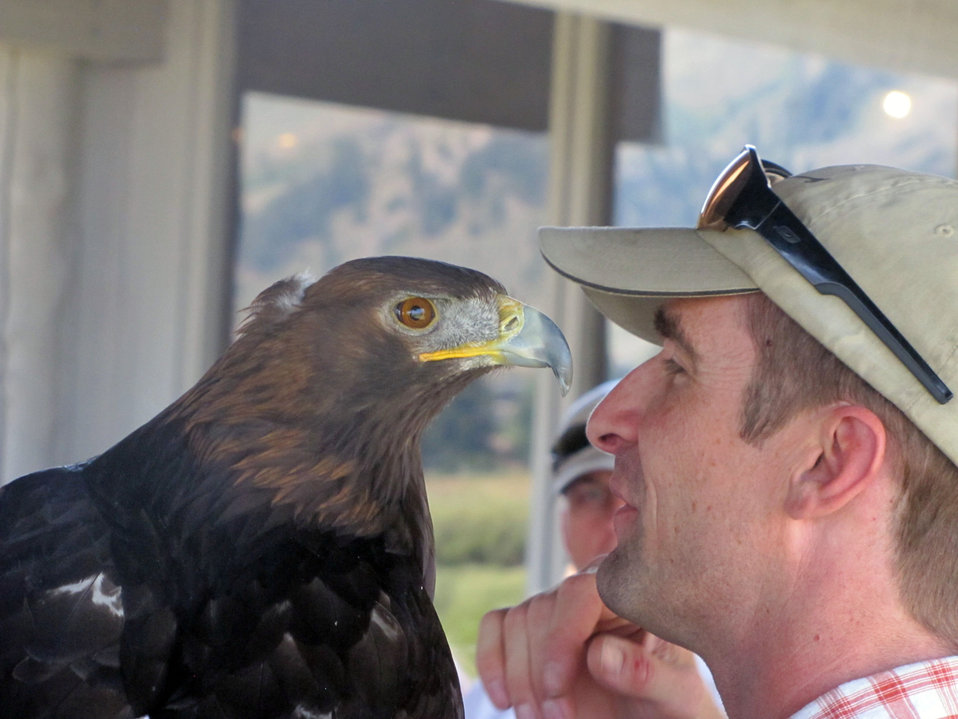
Beak to Beak

A few times each year, the Teton Raptor Center brings live birds to the National Elk Refuge visitor center and presents a dynamic educational program.

The Teton Raptor Center is a nonprofit organization that takes in injured, ill, and orphaned birds of prey year-round and provides veterinary care and rehabilitation in an effort to return raptors to the wild. Pictured here with a golden eagle is Program Director Jason Jones, who is also a master falconer and professional handler.